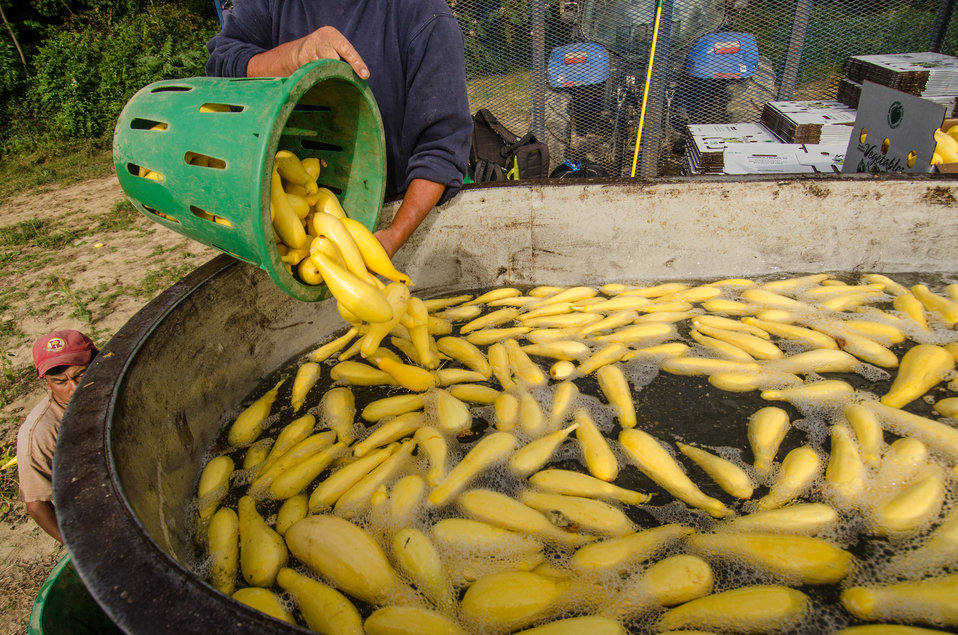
Migrant workers rinse and pack just-picked yellow squash on a processing trailer at Kirby Farms in Mechanicsville, VA on Sep. 20, 2013. Kirby Farms is a third-generation family farm that covers 500 acres, and generates produce and grains on a year-around operation.